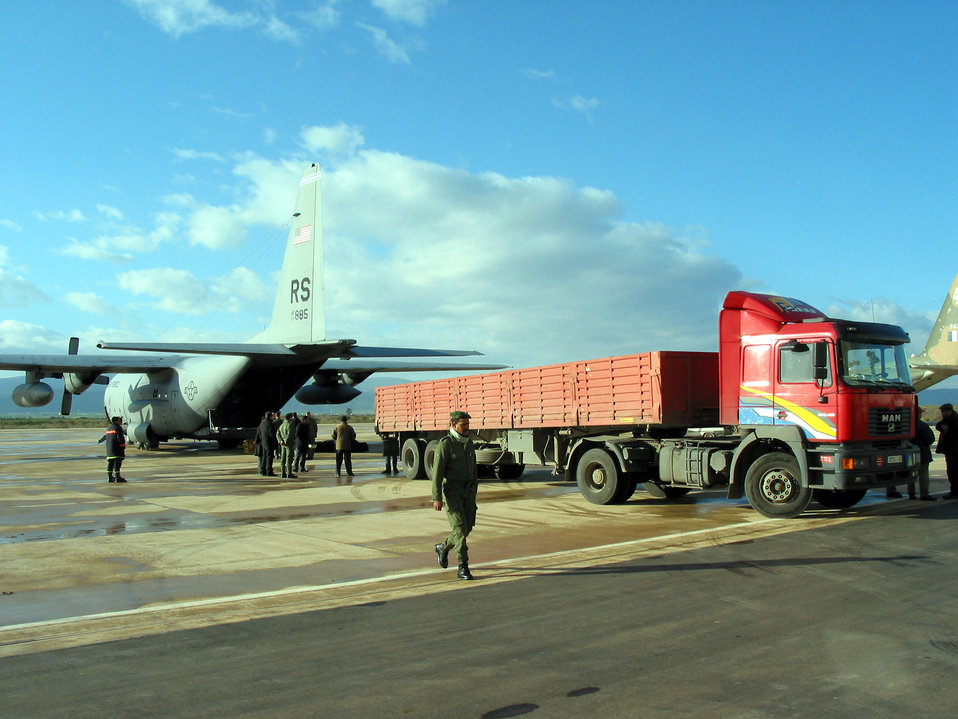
USAFE airlifts aid, experts to Morocco

AL HOCEIMA, Morocco -- Workers at Nador Airport in northern Morocco prepare to unload four pallets of humanitarian relief supplies Feb. 28 from an Air Force C-130 Hercules. The C-130 is assigned to the 37th Airlift Squadron at Ramstein Air Base, Germany.